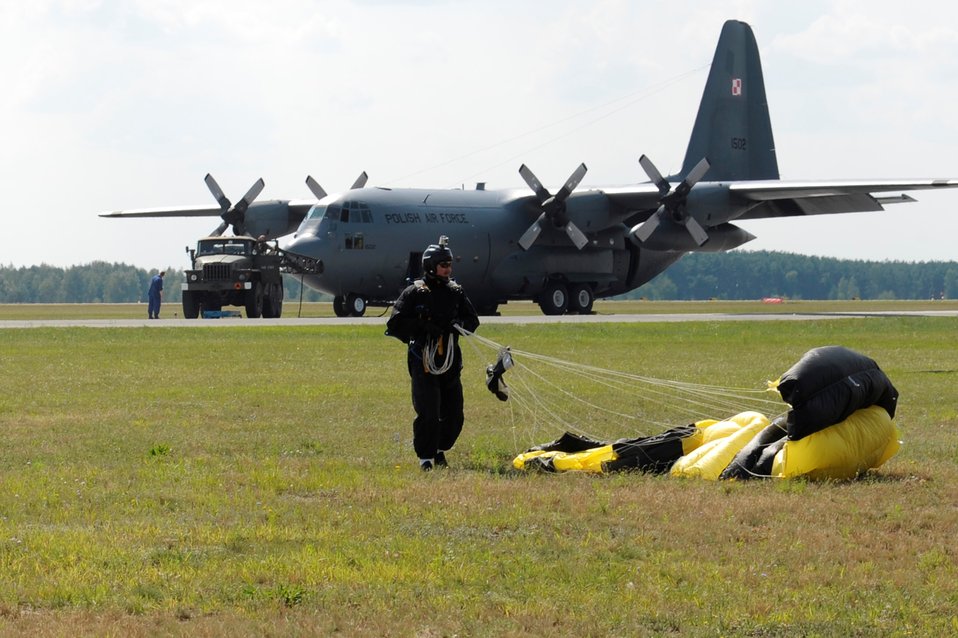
Exercise Screaming Eagle IV

Members of Polish special forces land during high-altitude, low-opening jumps with Air Force jumpmasters during Exercise Screaming Eagle IV in Povidz, Poland, July 30, 2012. The partnerships built between Poland and the U.S. during this exercise and others have paved the way for a new aviation detachment to be established in Poland to support quarterly joint training exercises with F-16 Fighting Falcons and C-130 Hercules aircraft.